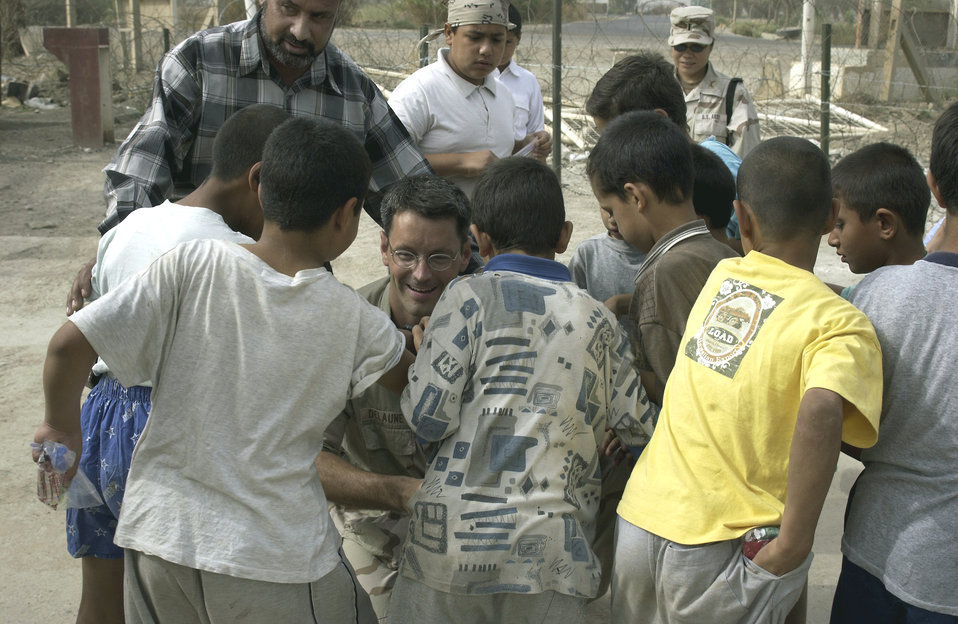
Medical visit

FRENCH VILLAGE, Iraq -- Maj. (Dr.) Gene Delaune shares candy and toys with children here. Delaune is an individual mobilization augmentee deployed from the 89th Medical Group at Andrews Air Force Base, Md.